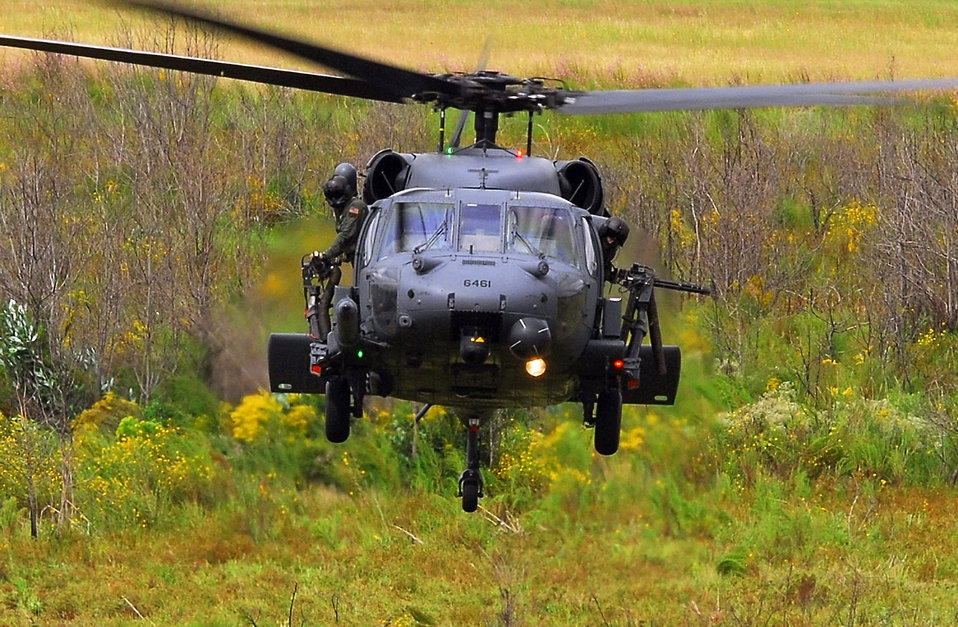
Help is on the way

An HH-60 Pave Hawk from the 41st Rescue Squadron at Moody Air Force Base, Ga., hovers during a combat search and rescue demonstration Oct. 4. The primary role of the HH-60 is to conduct day or night rescue operations in hostile environments.